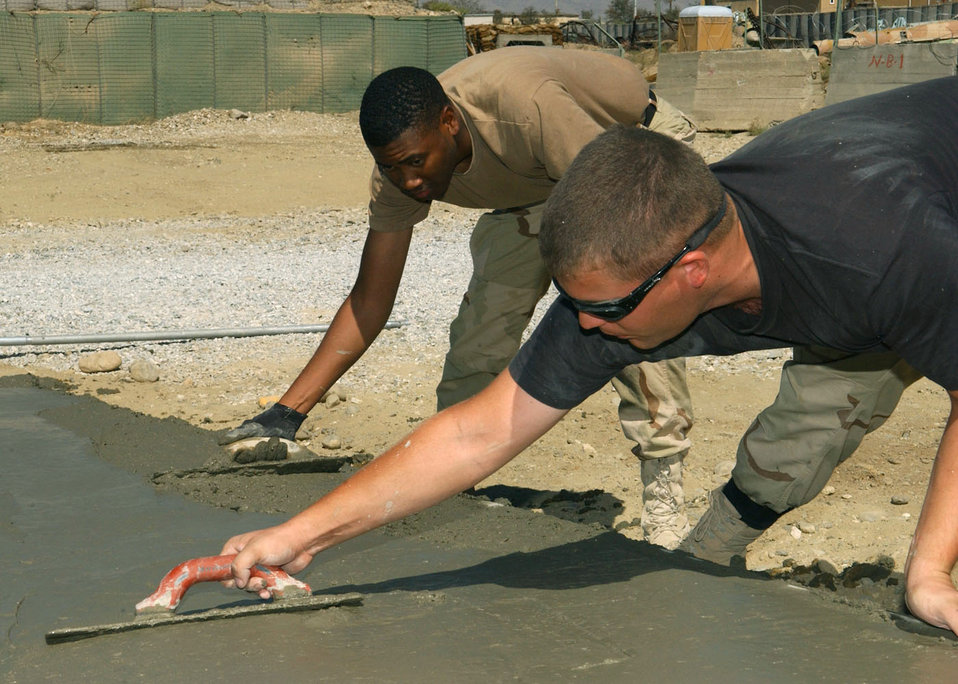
Civil engineers do whatever it takes to keep 'em flying

BAGRAM AIR BASE, Afghanistan -- Airman 1st Class David Depouw (foreground) and Senior Airman Derland Ellison ensure a newly poured pad will have a smooth finish by using magnesium floats to get the rocks down before the concrete dries. Airman Depouw and Sergeant Ellison are assigned to the 455th Expeditionary Operations Group's civil engineer flight here as a heavy-equipment apprentice and journeyman, respectively.